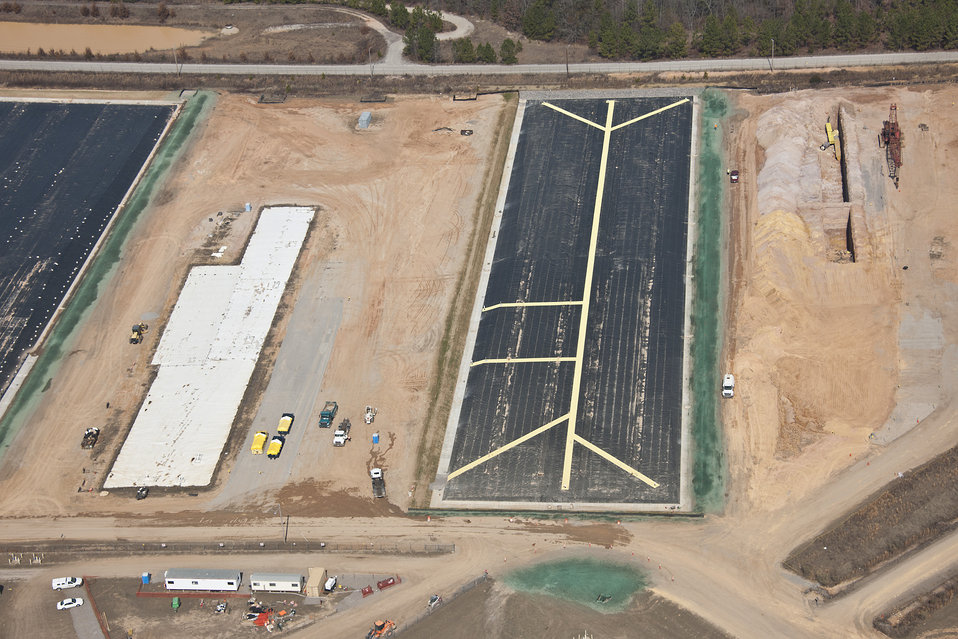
Low-level waste dispostion at SRS

An aerial view shows a slit trench used for the disposition of low-level waste at the Savannah River Site’s E Area. Covers for the slit trenches were installed as part of Recovery Act work.